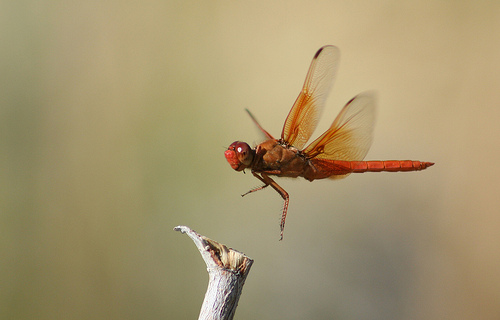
flame skimmer, Ash Meadows National Wildlife Refuge